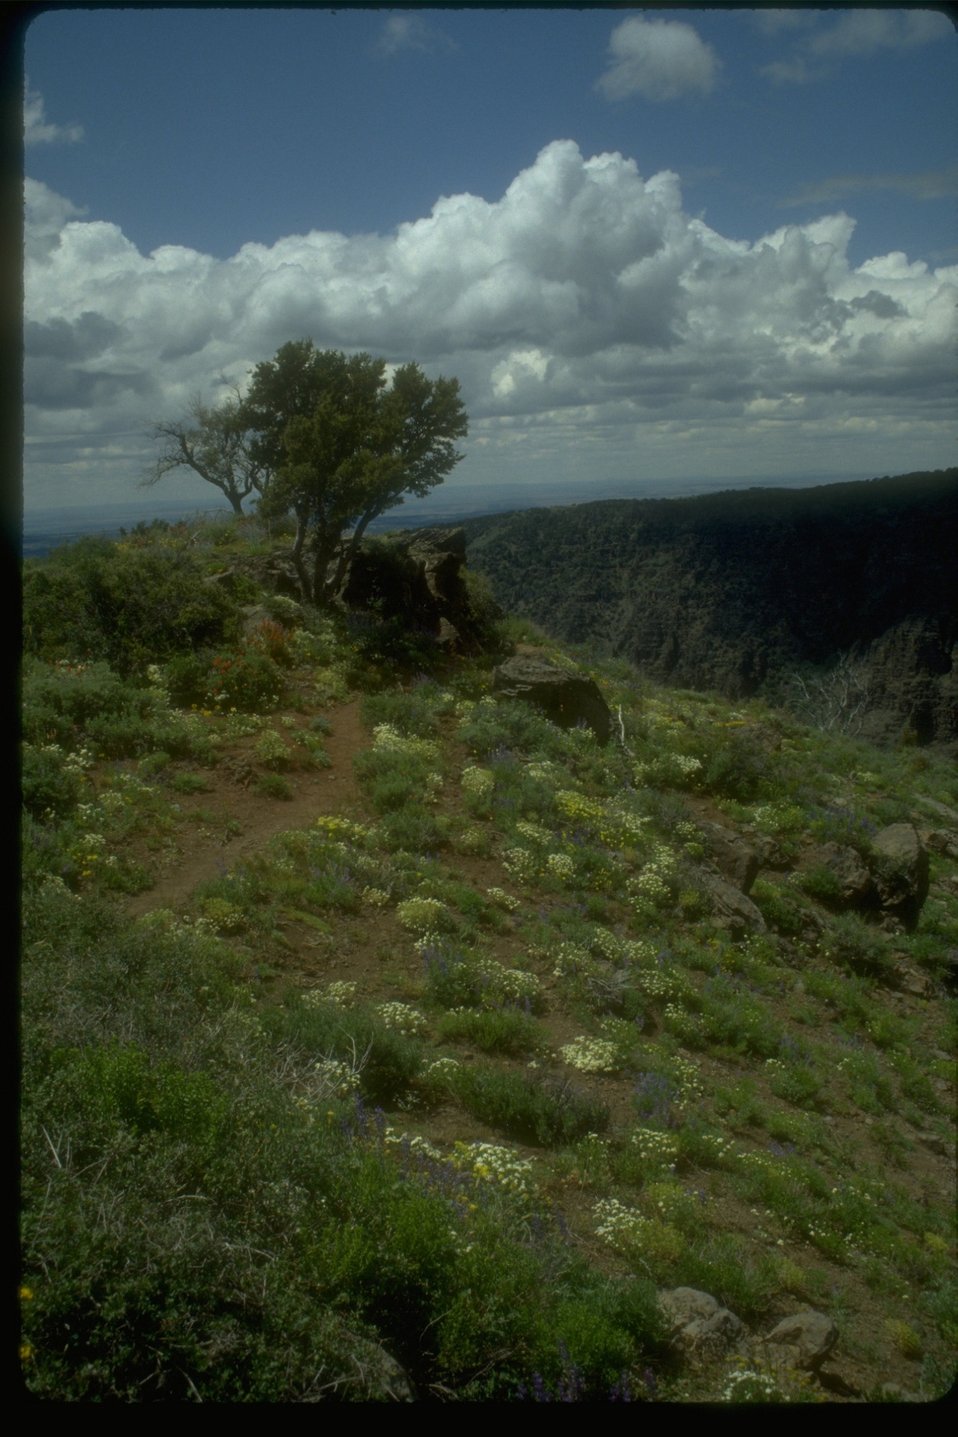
Lone shrub along the canyon rim. Leading up to the bush are wildflowers and clumps of grass with scattered rocks.